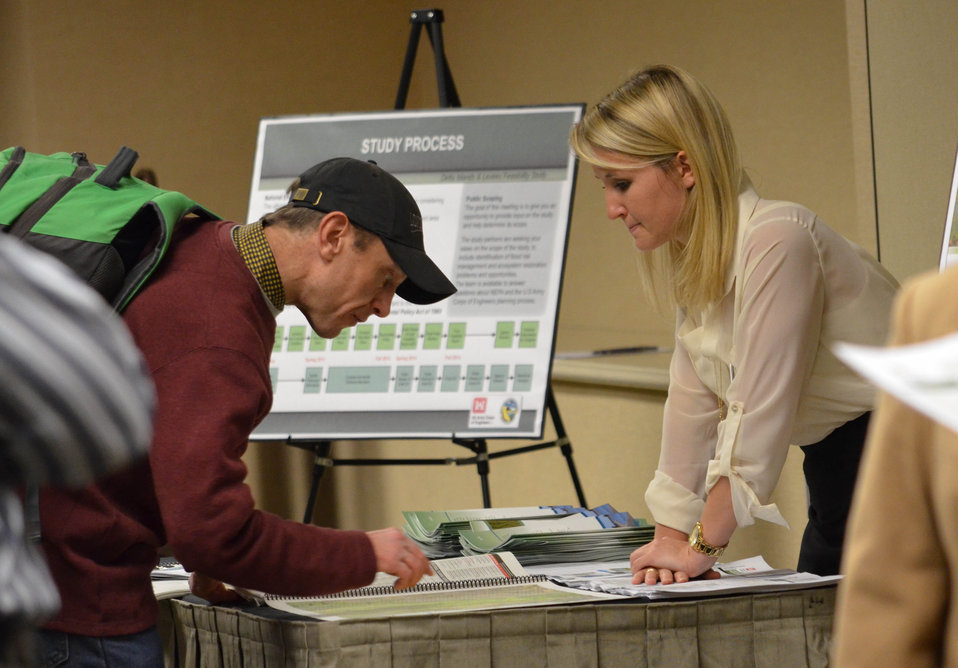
Corps discusses Delta study at public scoping meetings

Matilda Evoy-Mount (right), a planner with the U.S. Army Corps of Engineers Sacramento District, looks through a map book of the Delta with an attendee during a public scoping meeting for the Delta Islands and Levees Feasibility Study Feb. 20, 2013, in Sacramento, Calif. The Corps also hosted a meeting Feb.19 in Clarksburg. The public scoping meetings are the first step in the planning process for the study, which will determine potential Corps participation in flood risk management and ecosystem restoration projects in the Sacramento-San Joaquin Delta.